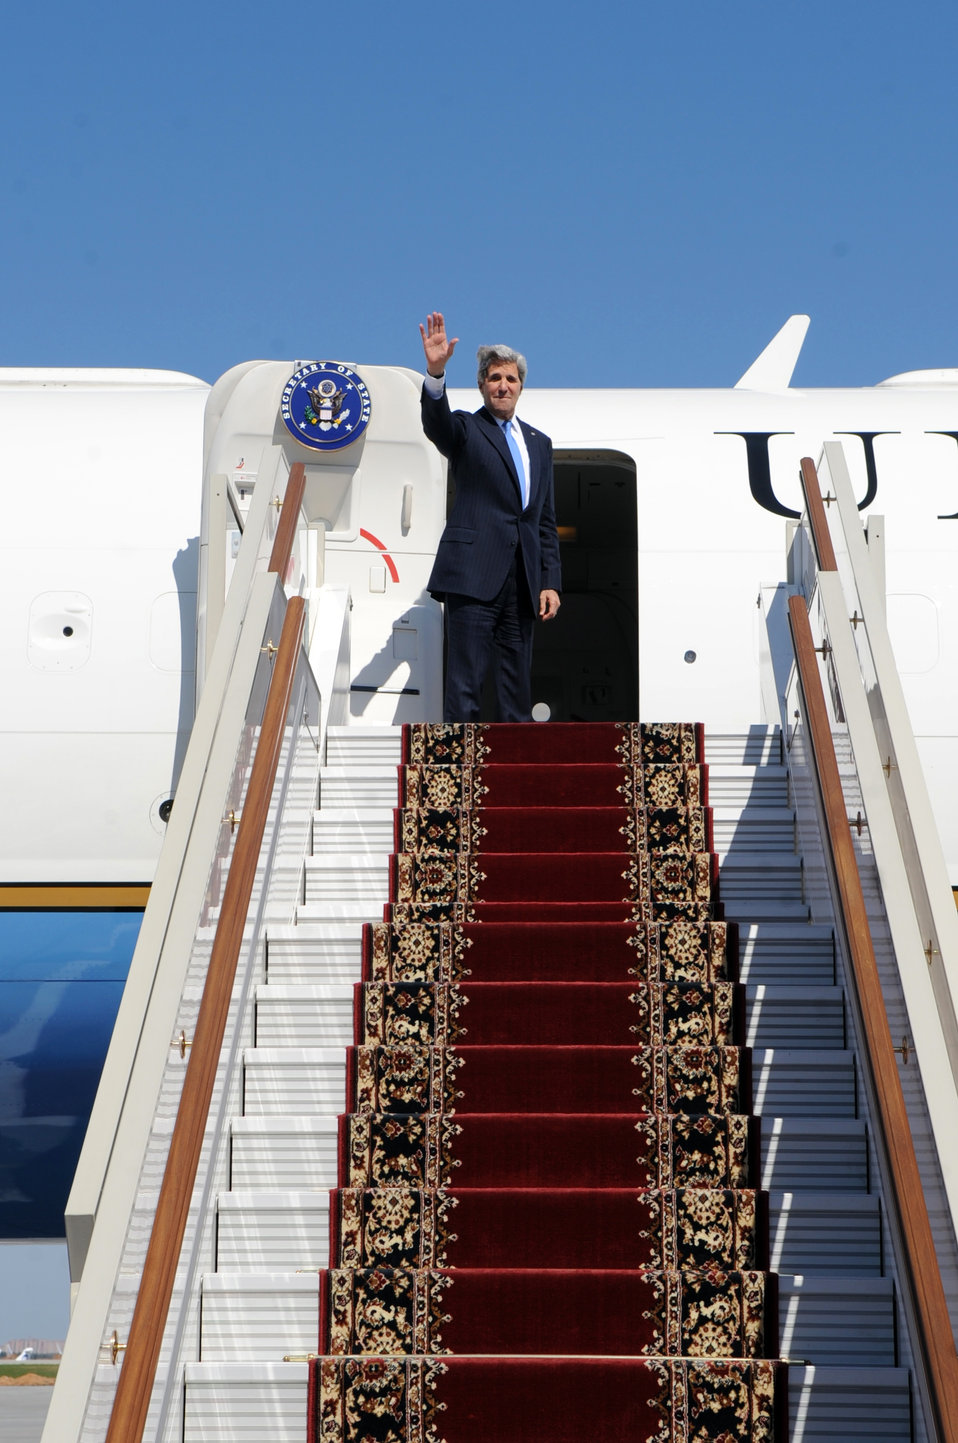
Secretary Kerry Waves Goodbye to Moscow

U.S. Secretary of State John Kerry waves goodbye after his visit to Moscow, Russia, on May 8, 2013.